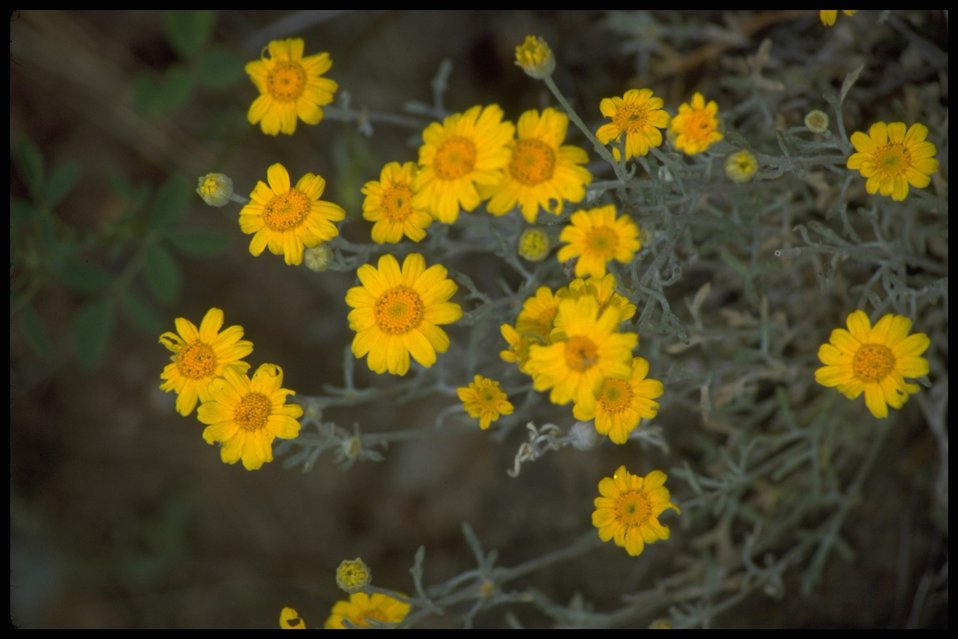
Medium shot of Oregon Sunshine wildflowers, Lakeview District.